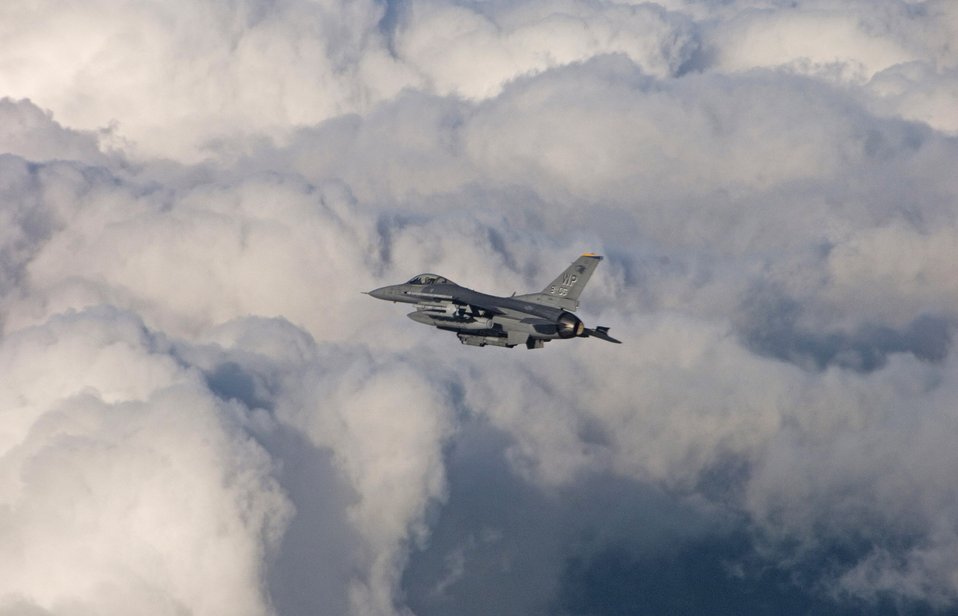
Close Air Support

Capt. Joshua King, an F-16 Fighting Falcon pilot assigned to the 80th Fighter Squadron at Kunsan Air Base, South Korea, searches for his target while flying over a designated training area Nov. 29 while participating in a close-air-support training mission. Pilots use such missions to simulate actual conditions they may face in combat and keep their war-fighting skills honed.